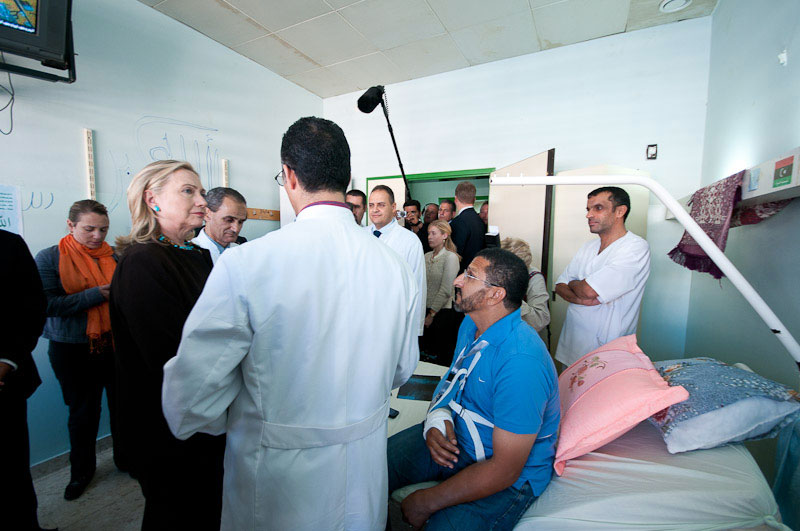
Secretary Clinton Meets With Wounded Soldiers

U.S. Secretary of State Hillary Rodham Clinton meets with wounded soldiers during a visit to a hospital in Tripoli, Libya, on October 18, 2011.